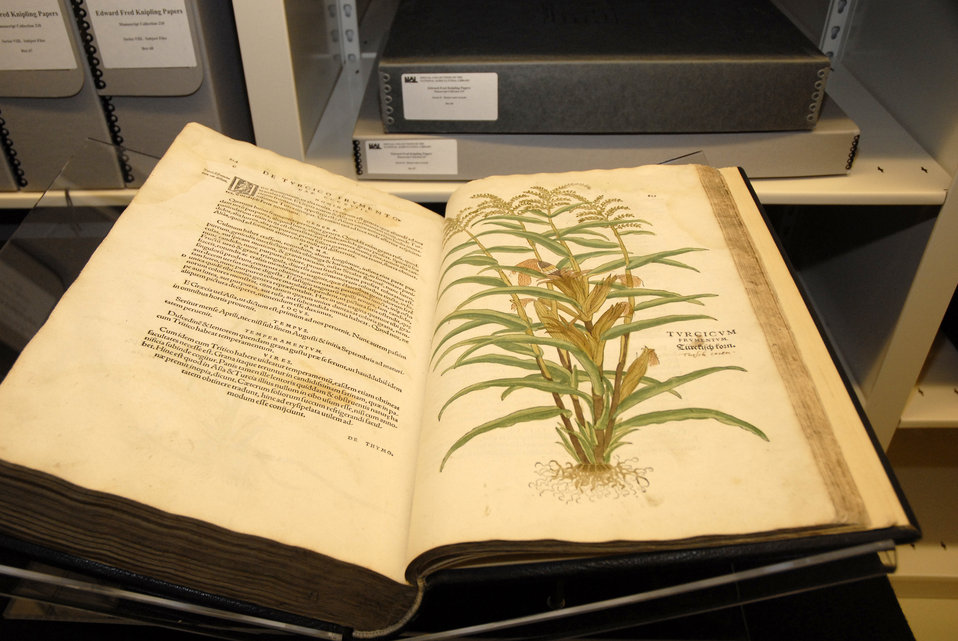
A special climate controlled area contains rare agricultural books that are stored at the U.S. National Agricultural Library (NAL) in Beltsville, MD on August 22, 2008. NAL is one of the world's largest agricultural research libraries, and serves as a national library of the U.S. and as the library of the U.S. Department of Agriculture (USDA). The library is one of four national libraries of the U.S. (along with the Library of Congress, the National Library of Medicine, and the National Library of Education). It is also the coordinator for the Agriculture Network Information Center, a national network of state land-grant institutions and coordinator for USDA field libraries. NAL was established on May 15, 1862, by the signing of the Organic Act by Abraham Lincoln. It served as a departmental library until 1962, when the Secretary of Agriculture officially designated it as the National Agricultural Library. USDA photo Alice Welch.